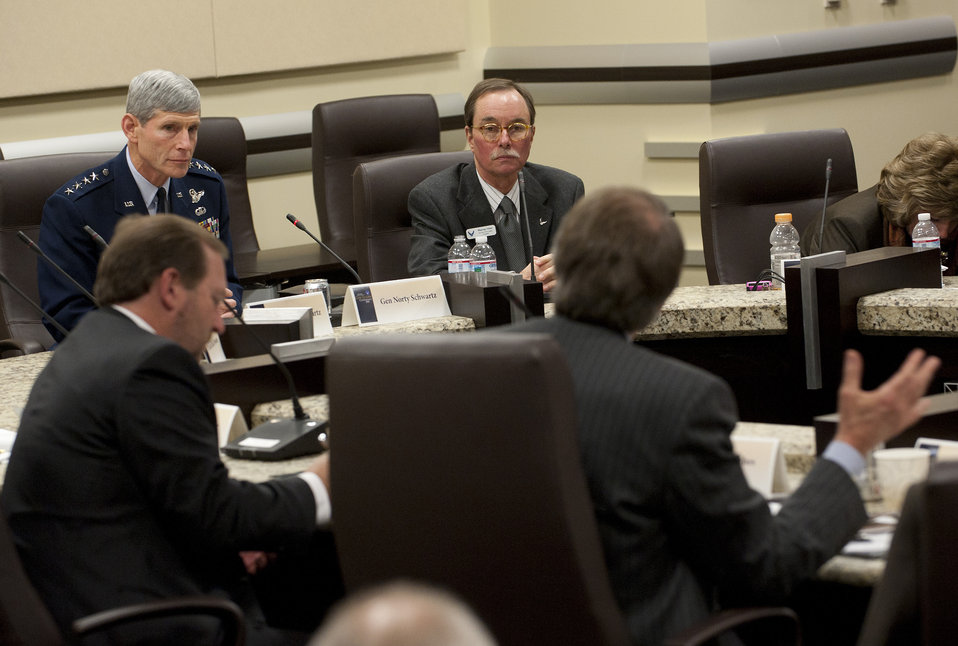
AF leaders meet with U.S. civic leaders

Air Force Chief of Staff Gen. Norton Schwartz (upper left) listens to questions from civic leaders representing communities from across the U.S. during a conference Jan. 31, 2012, at Joint Base Andrews, Md. Hosted by the general, the civic leaders attended briefings at the Pentagon and at JB Andrews.